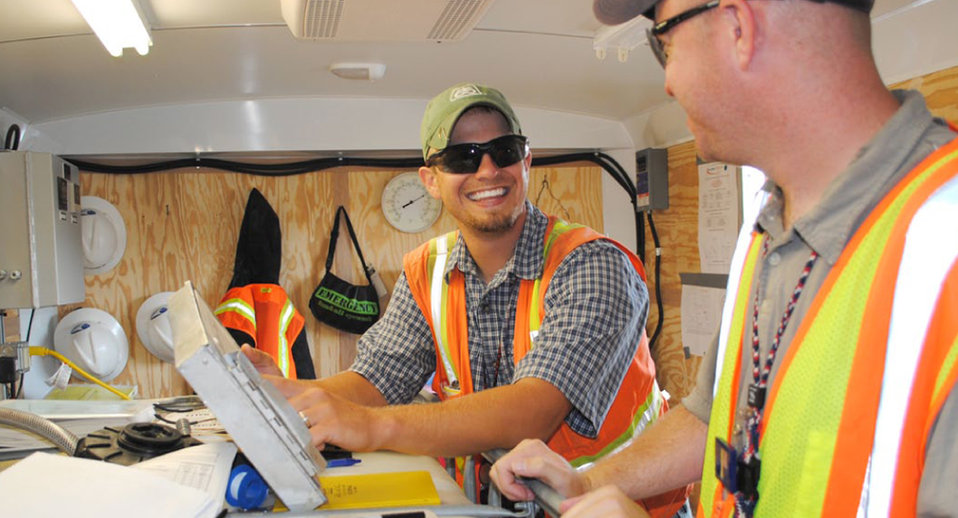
Portsmouth Site Feeds Bacteria to Render Hazardous Groundwater Waste Harmless

Fluor’s John Collins discusses a report with Neil Smith of CDM in the project’s operations center.
***

The U.S. Department of Energy (DOE) Office of Environmental Management’s Portsmouth site is using an environmentally friendly approach to reduce hazardous waste in a groundwater plume.

EM and specialists with the environmental remediation operations of decontamination and decommissioning (D&D) contractor, Fluor-B&W Portsmouth, are injecting food-grade organic compounds into contaminated groundwater to promote the growth of a special strain of anaerobic bacteria known as Dehalococcoides (DHC). The remedial technology is known as enhanced anaerobic bioremediation.

“The bacteria is consuming hazardous solvents and turning them into harmless end products,” said Neil Smith, a subject matter expert with CDM, a company subcontracted by Fluor to complete the project.